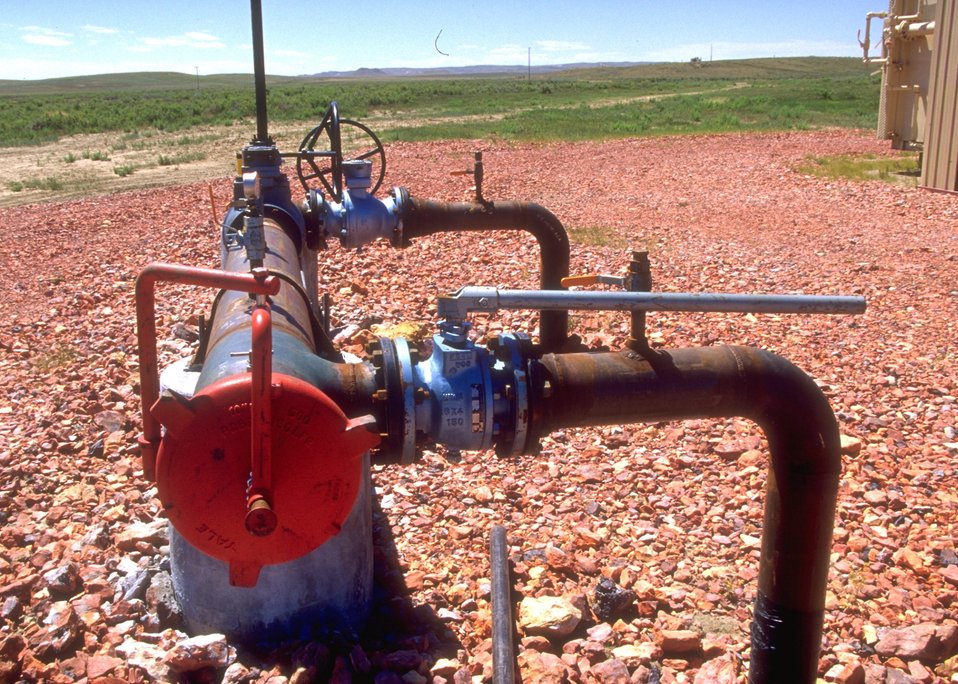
Facilities used in the production of coal bed methane, Buffalo Field Office.